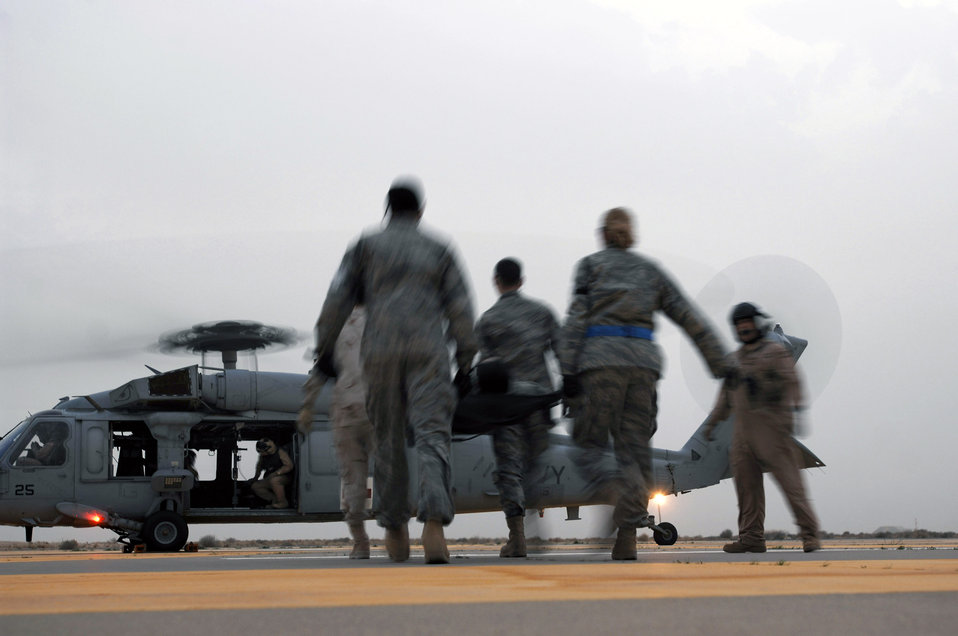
Litter training key to patient handling

Airmen from the 386th Expeditionary Medical Group move a litter toward a Navy MH-60 Sierra during litter management system training Feb. 18 at a Southwest Asia air base. The training familiarized medics on the loading and extracting techniques of patients for medical evacuation missions in support of operations Enduring Freedom and Iraqi Freedom.